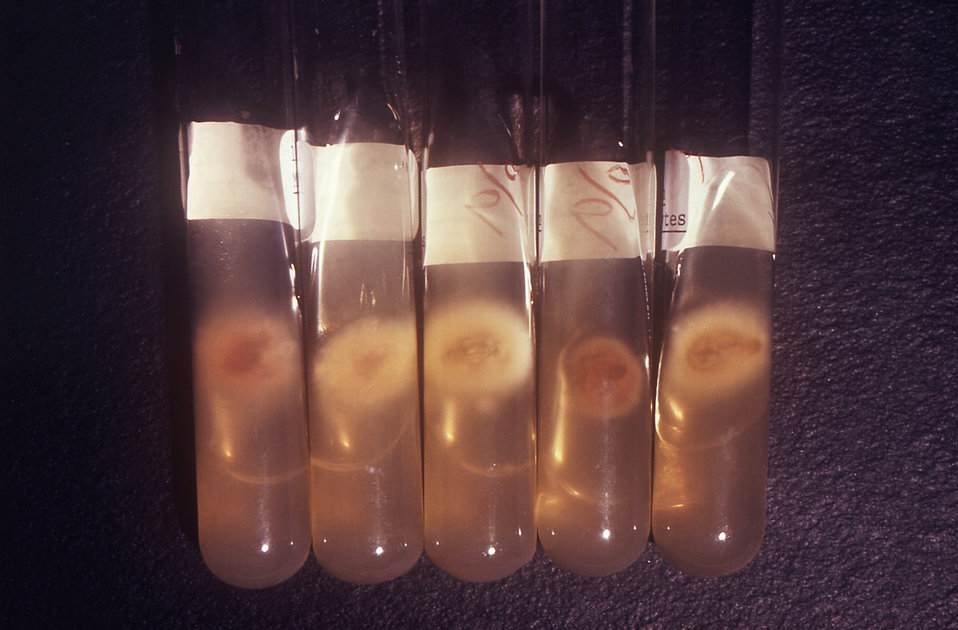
This was a study focusing on the comparison of the colonial growth and development of colonial coloration exhibited by a number of different dermatophytic fungal organisms grown on an unknown medium and viewed from the rear. From left to right the study included Microsporum audouinii, M. canis, 'fluffy' strain Trichophyton mentagrophytes, Epidermophyton floccosum, and a second tube of 'powdery strain' T. mentagrophytes. This image was captured after one week of growth. See PHIL 14704 for a frontal view of these colonies.